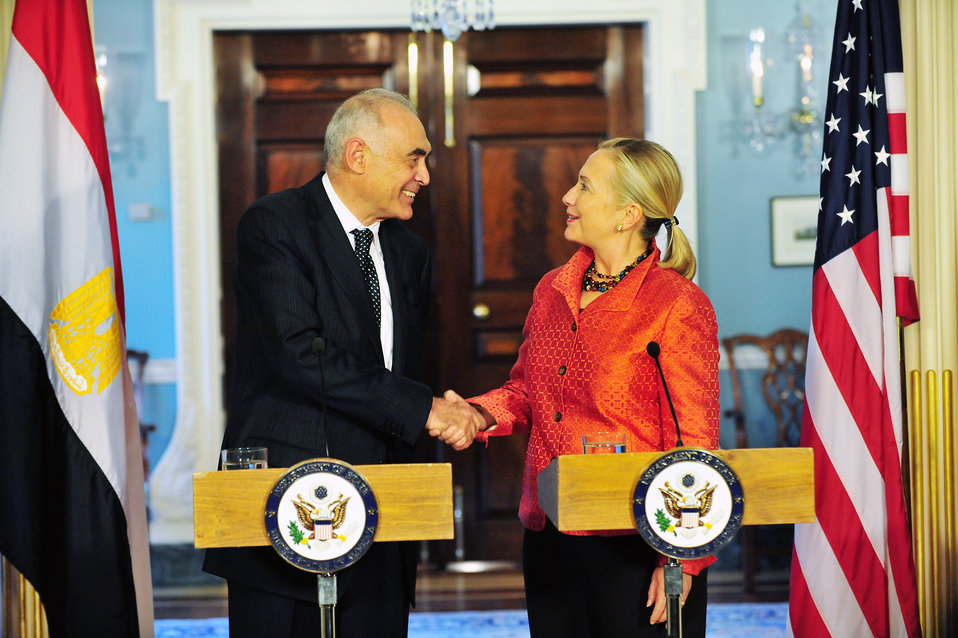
Secretary Clinton Shakes Hands With Egyptian Foreign Minister Mohamed Kamel Amr

U.S. Secretary of State Hillary Rodham Clinton shakes hands with Egyptian Foreign Affairs Minister Mohamed Kamel Amr after their joint press conference at the U.S. Department of State in Washington, D.C., in September 28, 2011.